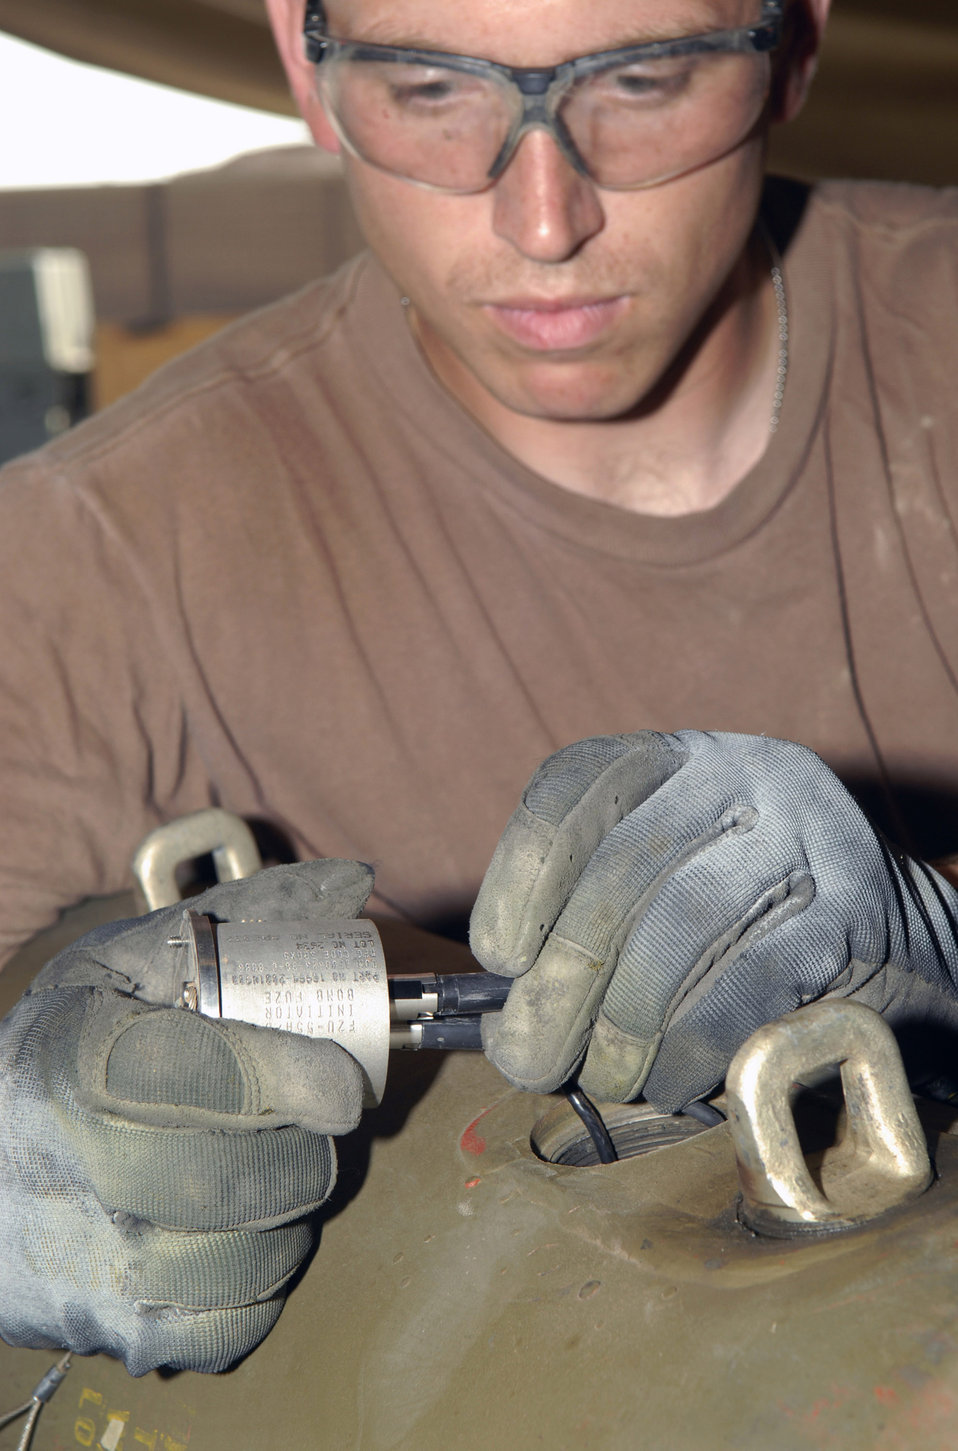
Bombs away

Staff Sgt. Travis Tarr connects a proximity sensor as he builds a joint direct attack munition Oct. 15 at Balad Air Base, Iraq. The proximity sensor allows the bomb to explode prior to coming in contact with the ground. Sergeant Tarr is deployed from Spangdahlem Air Base, Germany. He is assigned to the 332nd Expeditionary Maintenance Squadron.